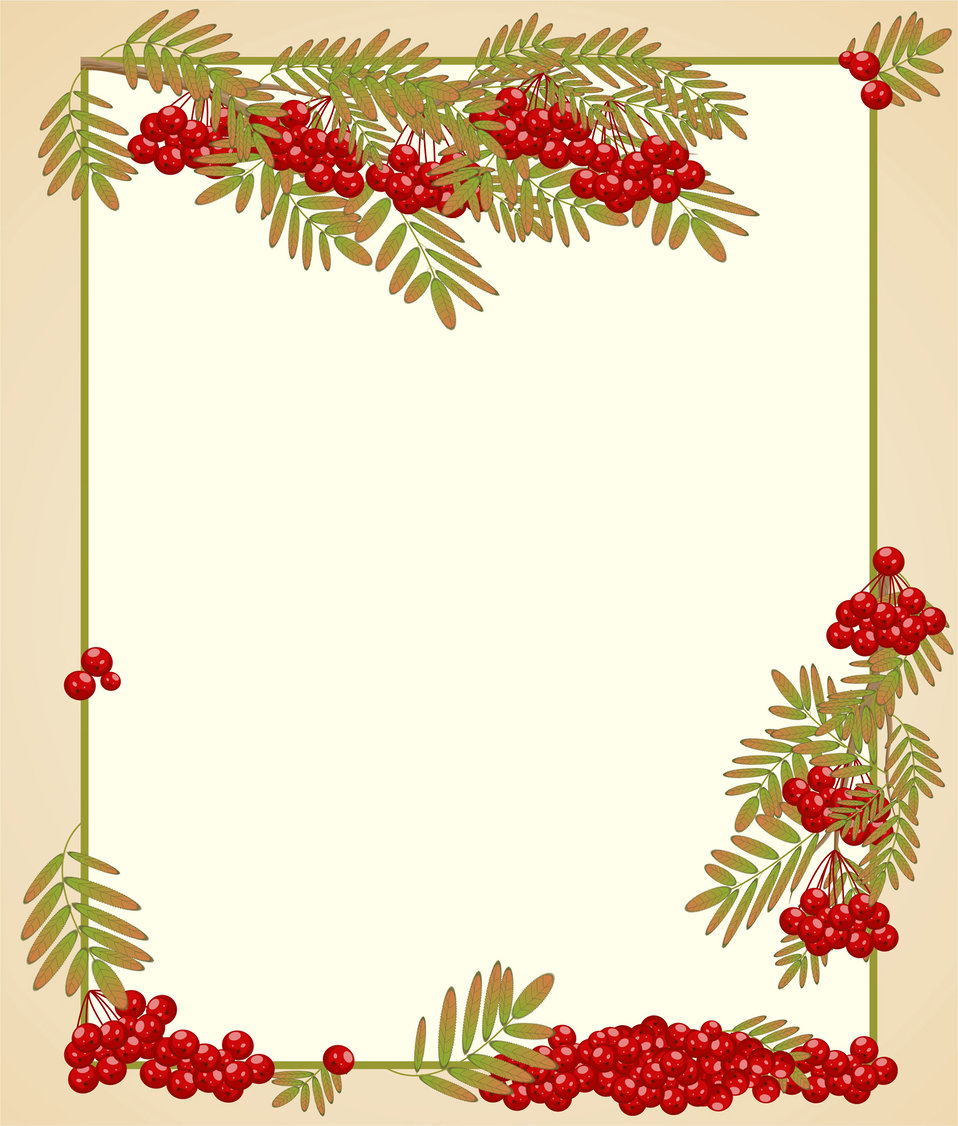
Background with rowan

Vector background with branches of rowan.